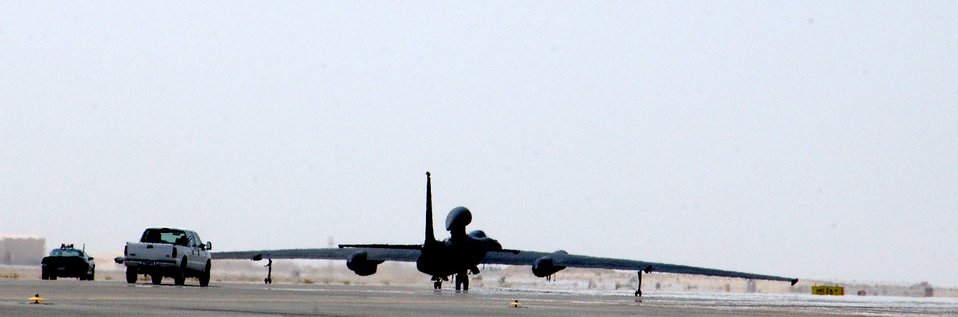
U-2 operations

A U-2 piloted by Capt. Greg Hafner rolls toward takeoff followed by its chase car and other vehicles at a forward-operating base in Southwest Asia Sept. 5. The captain is assigned to the 99th Expeditionary Reconnaissance Squadron.